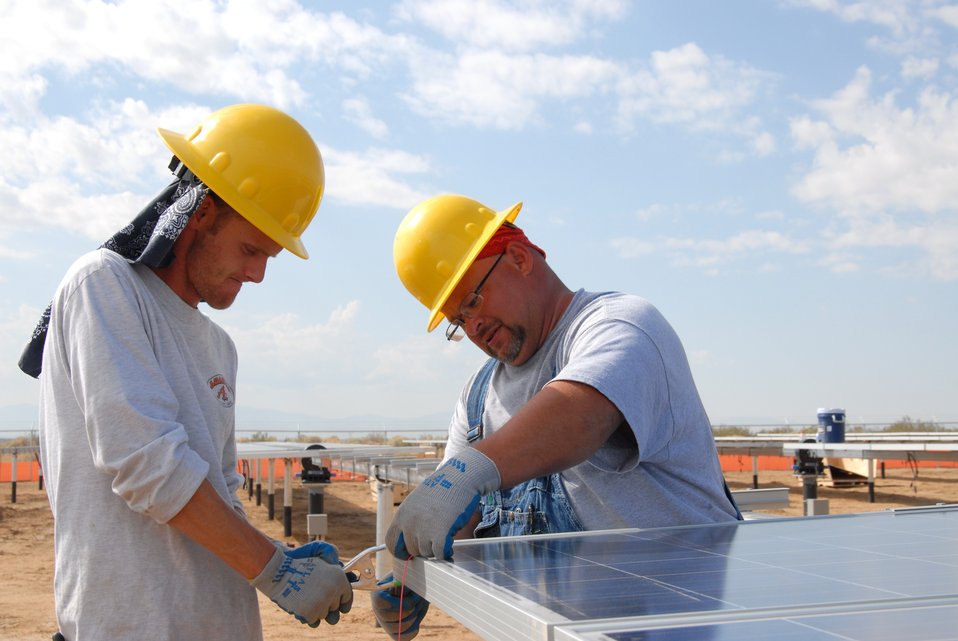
AF leads DOD in green power

Construction workers attach a solar panel to a stand at Edwards Air Force Base, Calif., Feb. 2, 2012. This is one of three, one-megawatt solar arrays that are now complete and producing power. There are currently 50 renewable energy projects under construction at Air Force installations around the world.